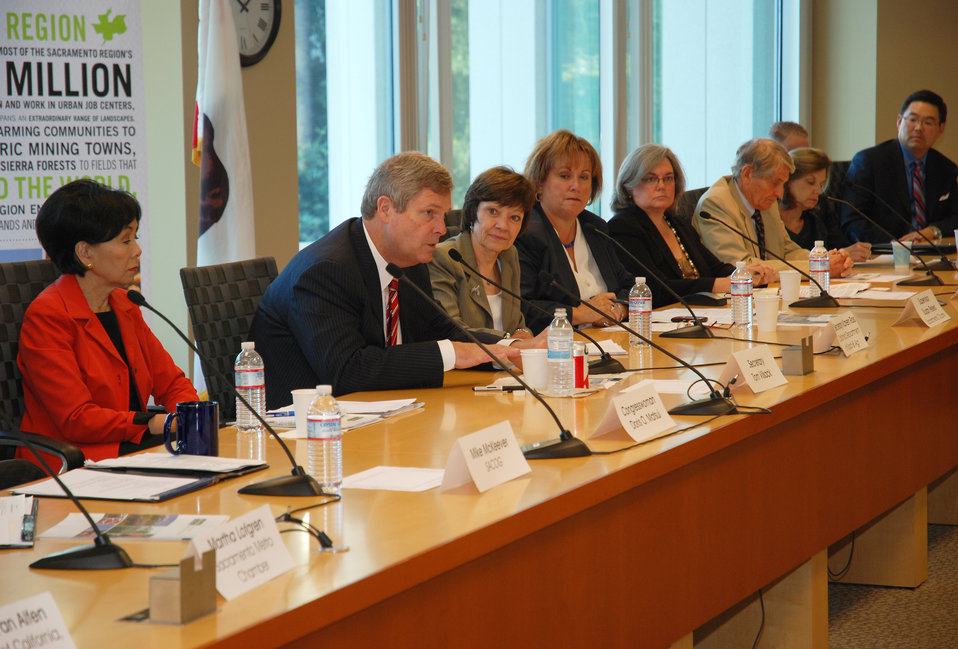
Agriculture Secretary Tom Vilsack attending the White House Business Council Breakfast Meeting in Sacramento, CA, on September 26, 2011. Also attending was Congresswoman Doris Matsui (at left of the Sec.) and Secretary Karen Ross, CA Department of Food & Agriculture (at right of the Sec.).